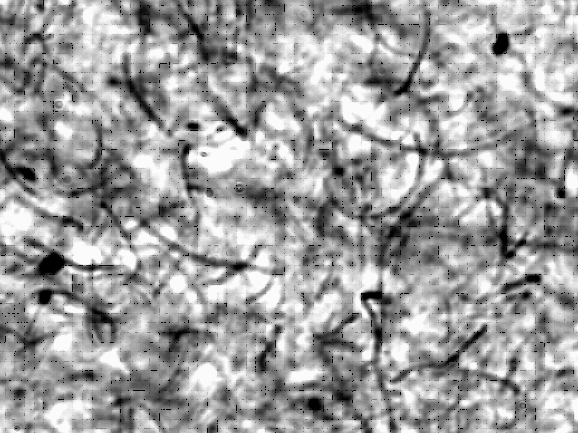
Shear Ingenuity: Tweaking the Conductivity of Nanotube Composites

Confocal microscope image of a carbon nanotube/polypropylene composite. Small concentrations of carbon nanotubes--here about one percent by mass--can change the electrical properties of the polymer dramatically.